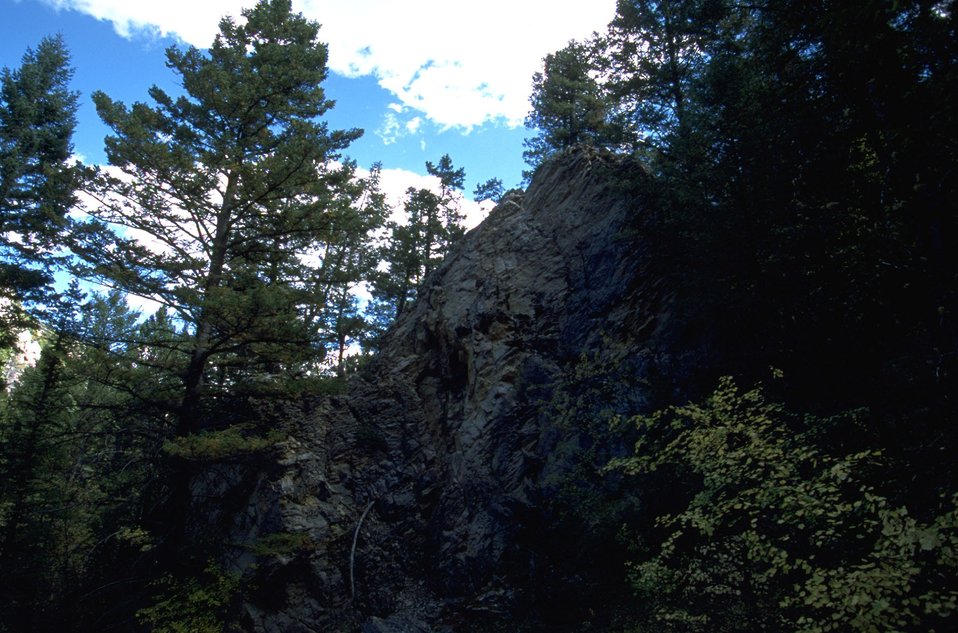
Looking up a rocky cliff in the Centennial Mountains